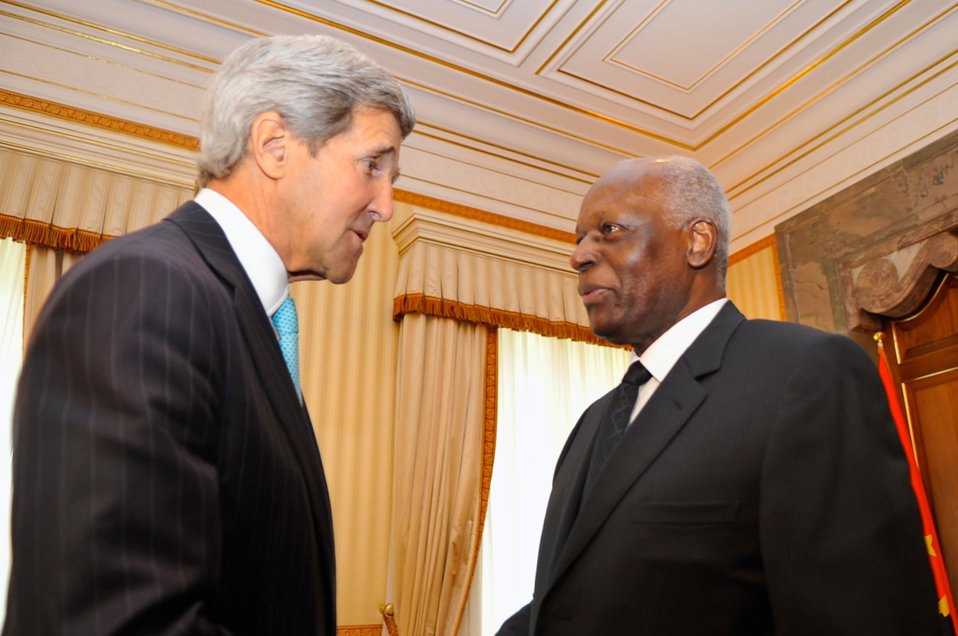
Angolan President dos Santos Welcomes Secretary Kerry to Presidential Palace in Luanda

U.S. Secretary of State John Kerry is greeted by Angolan President Angolan President Jose Eduardo do Santos as he arrives at the Presidential Palace in Luanda for a meeting on May 5, 2014.